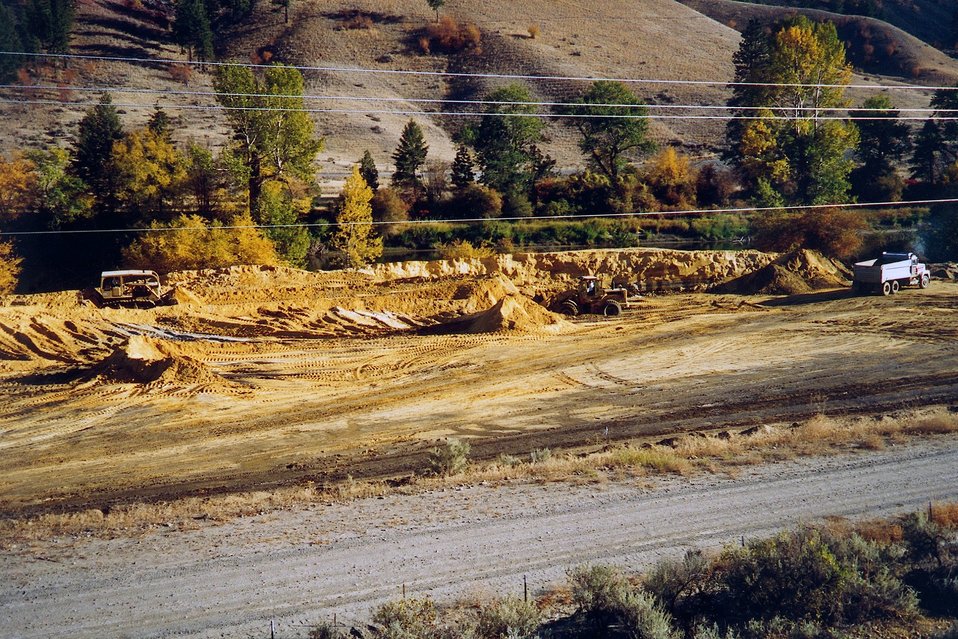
AML. Kaaba-Texas Mine Repository Area, Tailings.